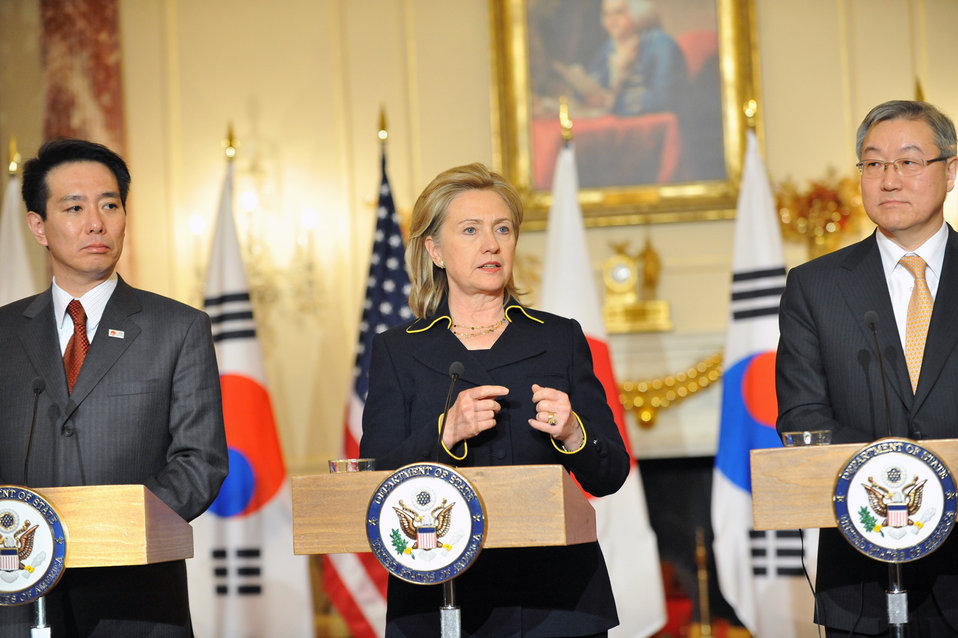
Secretary Clinton Holds a Press Conference With Japanese Foreign Affairs Minister Seiji Maehara and Republic of Korea Foreign Affairs and Trade Minister Kim Sung-Hwan

U.S. Secretary of State Hillary Rodham Clinton holds a joint press availability with Japanese Foreign Affairs Minister Seiji Maehara and Republic of Korea Foreign Affairs and Trade Minister Kim Sung-Hwan at the U.S. Department of State in Washington, D.C., on December 6, 2010.